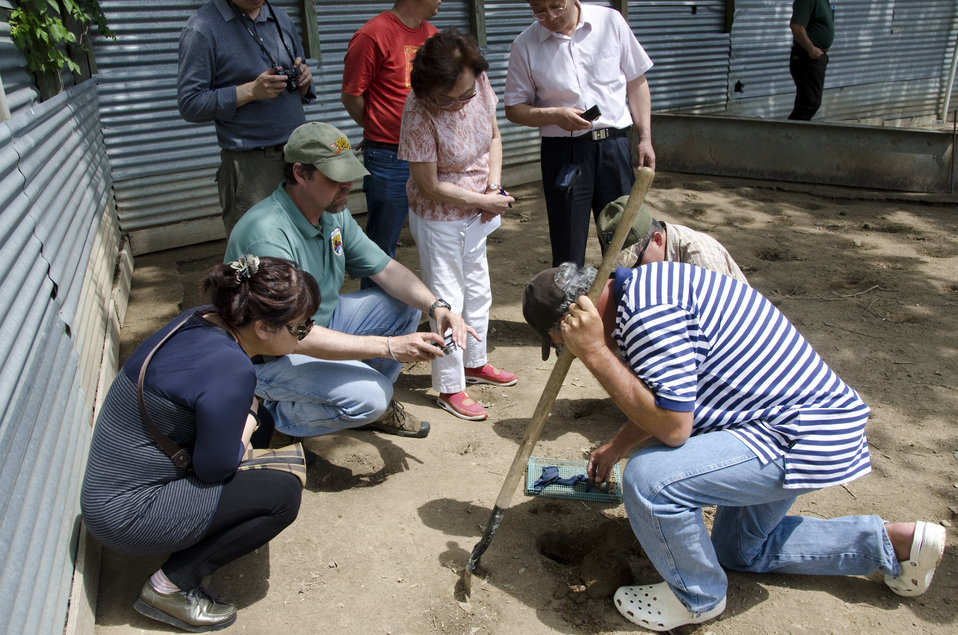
Chinese delegates collect turtle eggs

Turtle eggs were collected from a red eared slider nest.